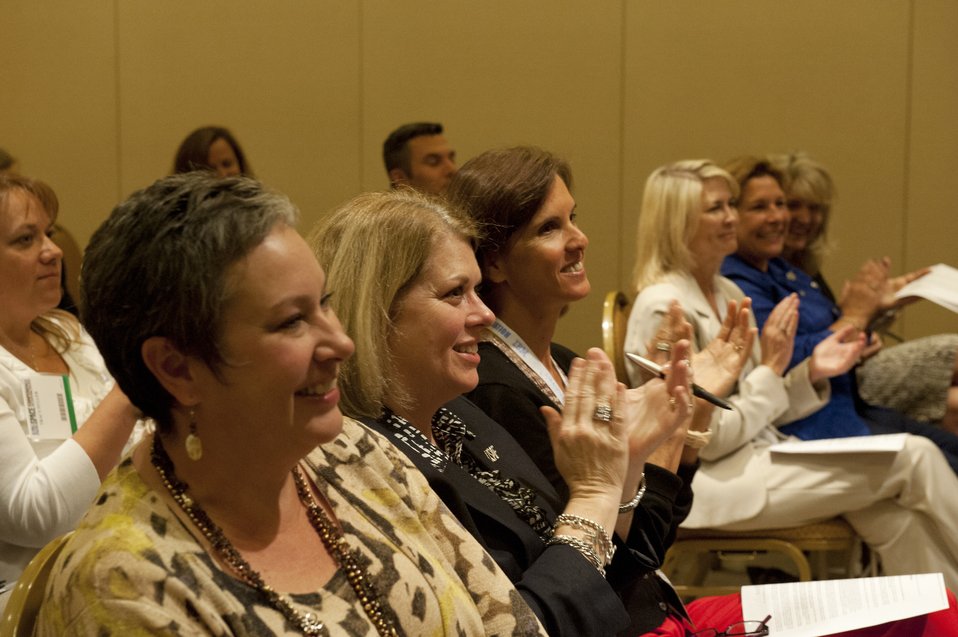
Partnerships develop Air Force youth

Attendees applause as they listen to one of the speakers during the Air Force Association Family Forum in Washington, D.C., Sept. 17, 2012.